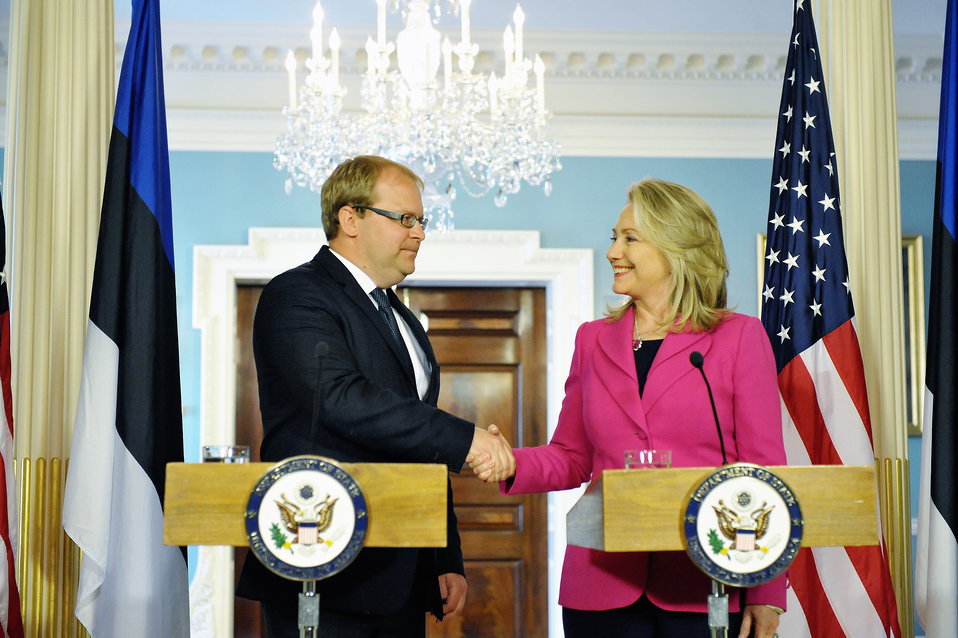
Secretary Clinton Meets With Estonian Foreign Minister Paet

U.S. Secretary of State Hillary Rodham Clinton meets with Estonian Foreign Minister Urmas Paet at the U.S. Department of State in Washington, D.C., on March 27, 2012.